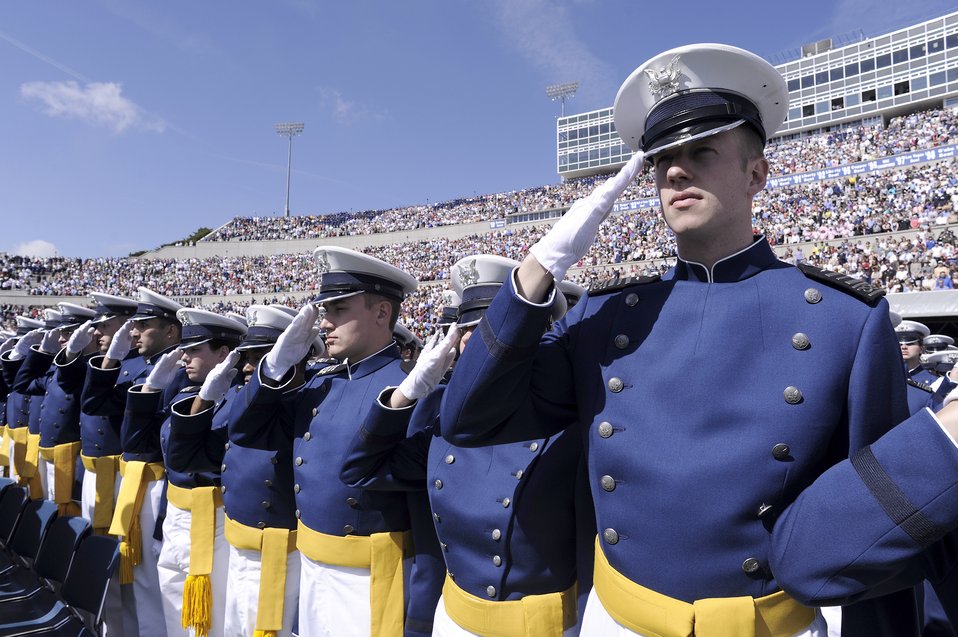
Joint Chiefs chairman delivers Academy commencement

Class of 2010 graduates salute for the national anthem at the commencement of the graduation ceremony May 26, 2010, at the U.S. Air Force Academy, Colo. Navy Adm. Mike Mullen delivered the commencement address. Admiral Mullen is the chairman of the Joint Chiefs of Staff.